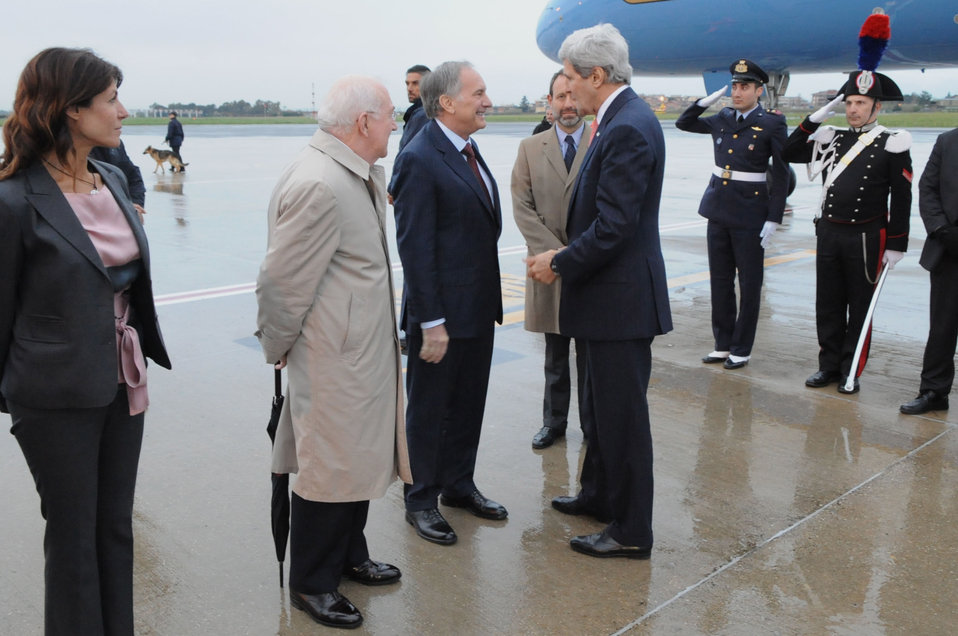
Secretary Kerry Chats With Ambassador Phillips Upon Arriving in Rome

U.S. Secretary of State John Kerry chats with U.S. Ambassador to Italy John Phillips and U.S. Ambassador to the Holy See Kenneth Hackett upon arriving in Rome, Italy, on March 25, 2014, in advance of President Obama's visit.